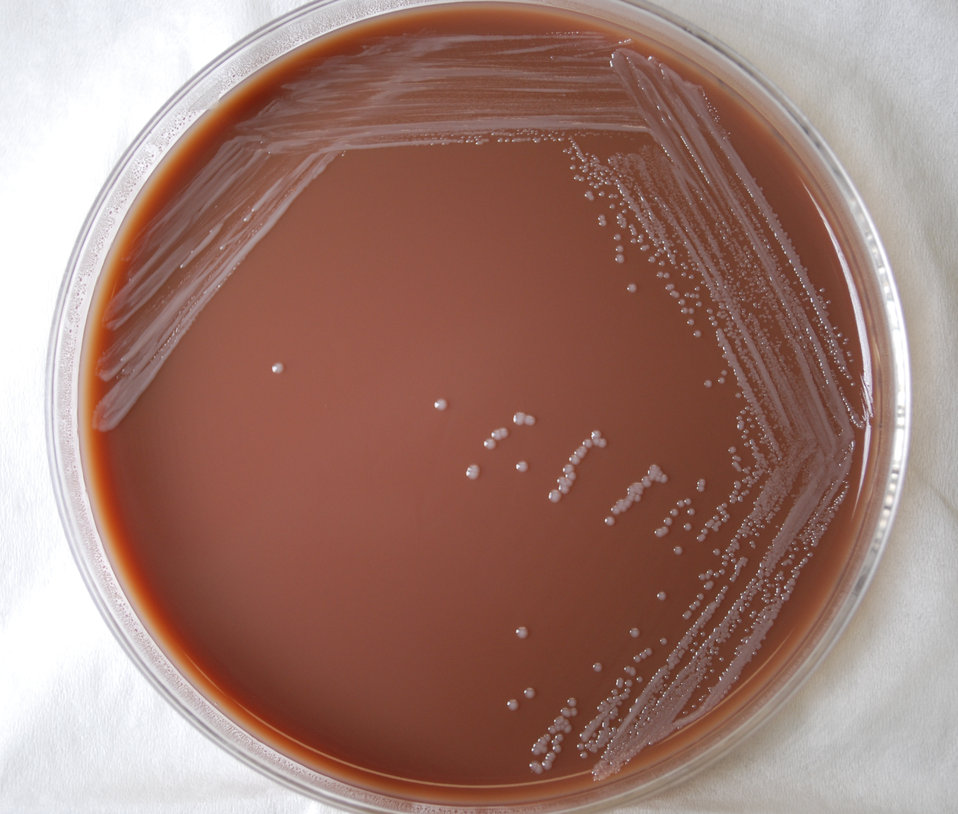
This photograph depicts the colonial morphology displayed by Gram-negative Brucella abortus bacteria, which was grown on a medium of chocolate agar, for a 72 hour time period, at a temperature of 37�C. For a closer view of these bacterial colonies, see PHIL 12287 and 12288. B. abortus bacteria cause the disease brucellosis.